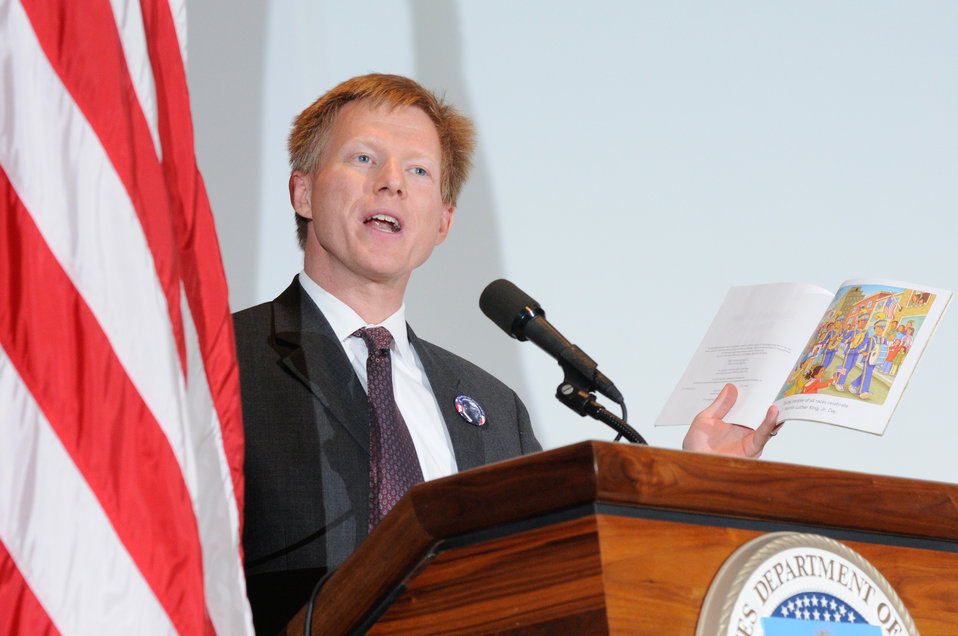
U.S. Department of Agriculture (USDA) Director Faith Based and Neighborhood Partnerships Max Finberg, holds up a children's book biography of Dr. Martin Luther King, Jr., that he reads to his children, during the USDA Dr. Martin Luther King, Jr. National Service Day event, honoring recipients of the Drum Major for Service Award, at the USDA Jefferson Auditorium on Tuesday, Jan. 15, 2013.